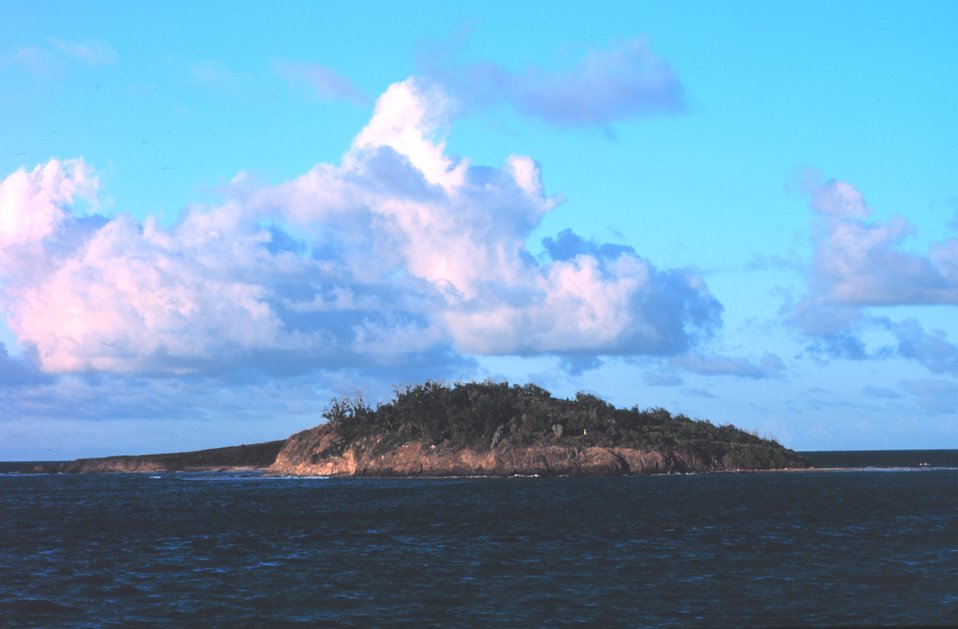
Green Cay from Chenay Bay.